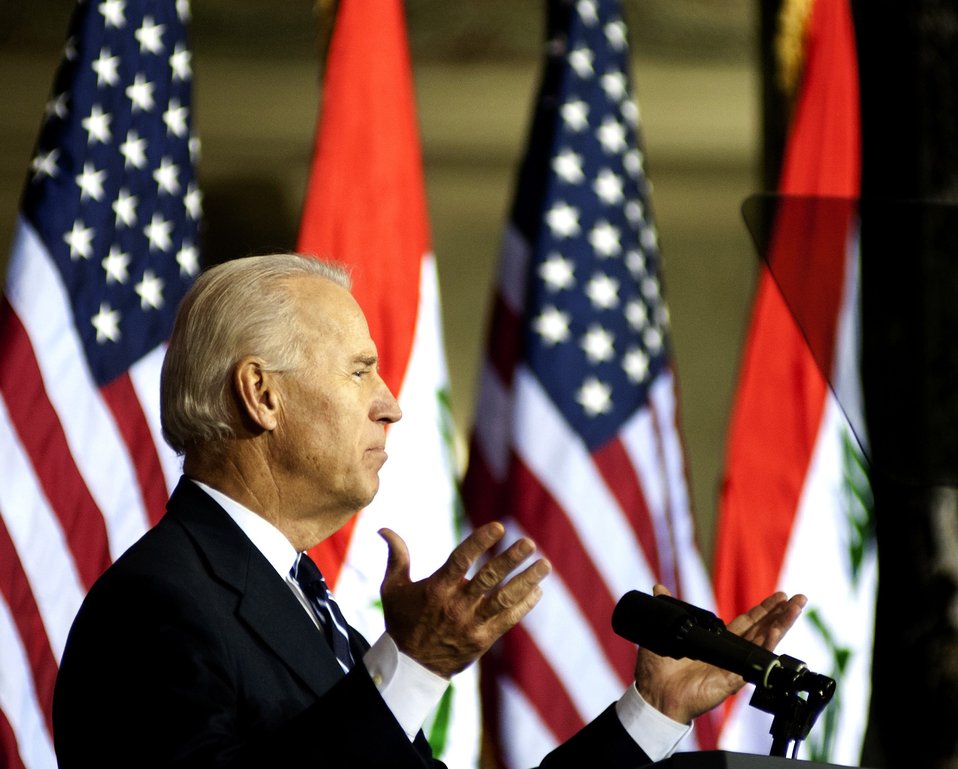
Biden, al-Maliki honor troops' sacrifices during Day of Commitment Ceremony

U.S. Vice President Joe Biden gives a speech during the Government of Iraq Day of Commitment Ceremony in the Al Faw Palace at Victory Base Complex, Iraq, Dec. 1, 2011. The ceremony commemorated the sacrifices and accomplishments of U.S. and Iraqi service members.